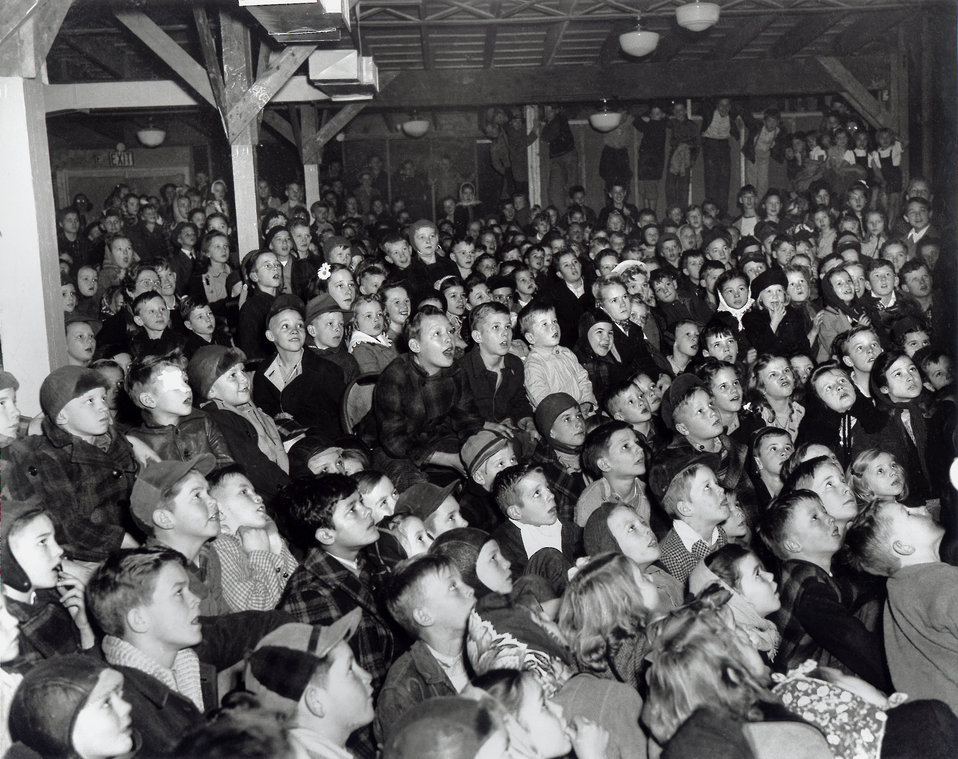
Kiddy Club-Midtown Recreation Hall Oak Ridge

PRO244 DOE photo Ed Westcott

Kiddy Club-Midtown Recreation Hall Oak Ridge Tennessee 1/6/1945